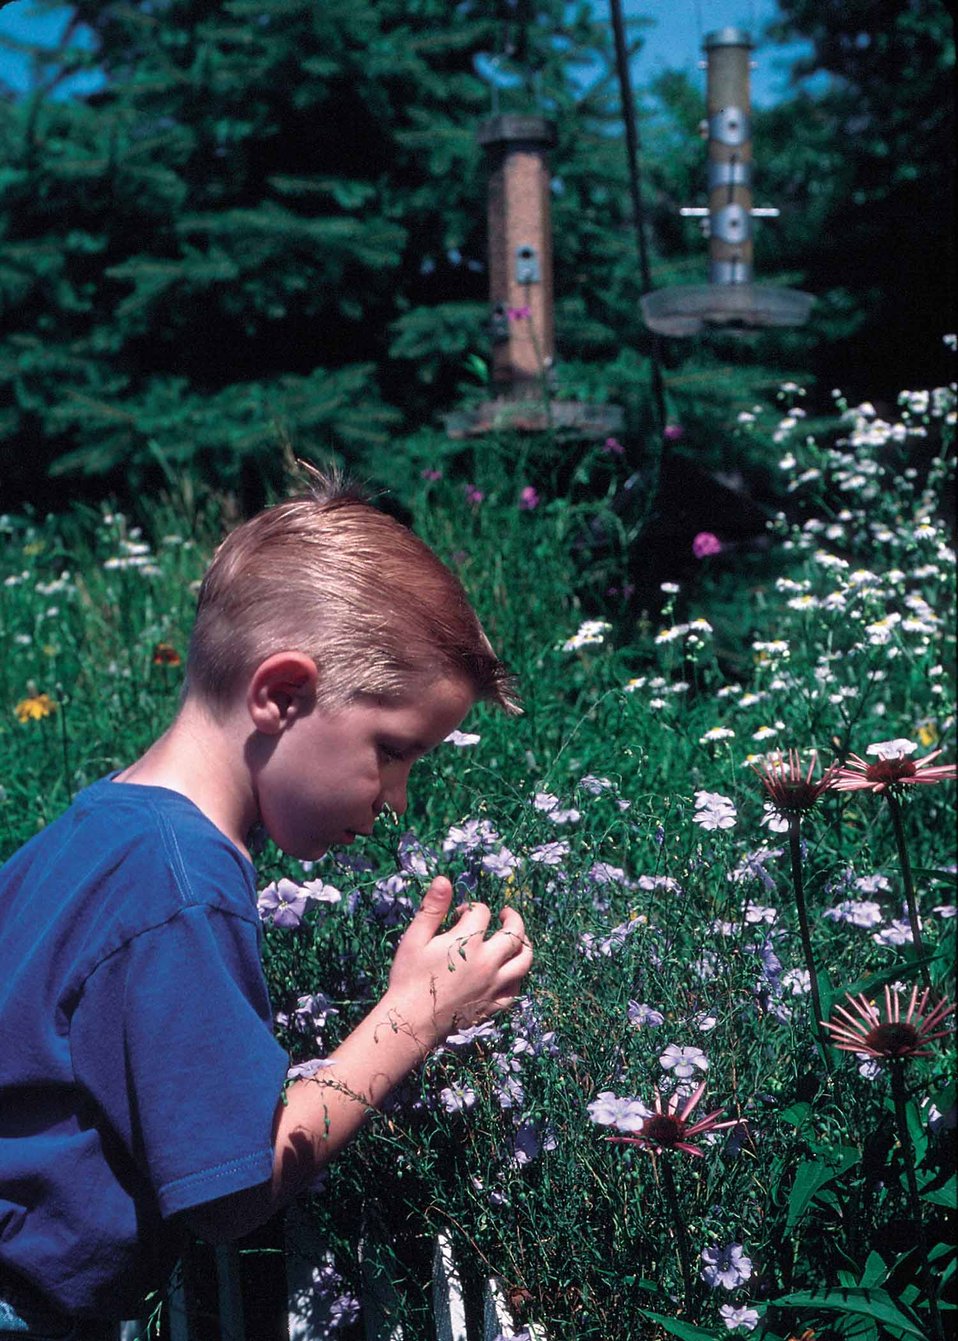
Young boy examines flowers in a back yard in Urbandale, Iowa.